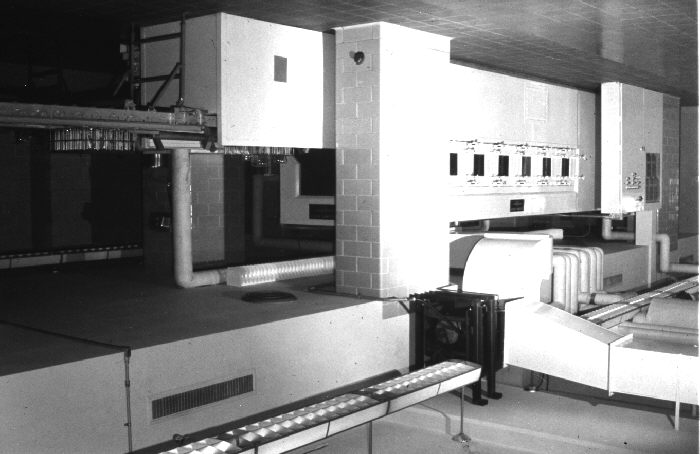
Mechanized laboratory glassware washer (Woodman machine).